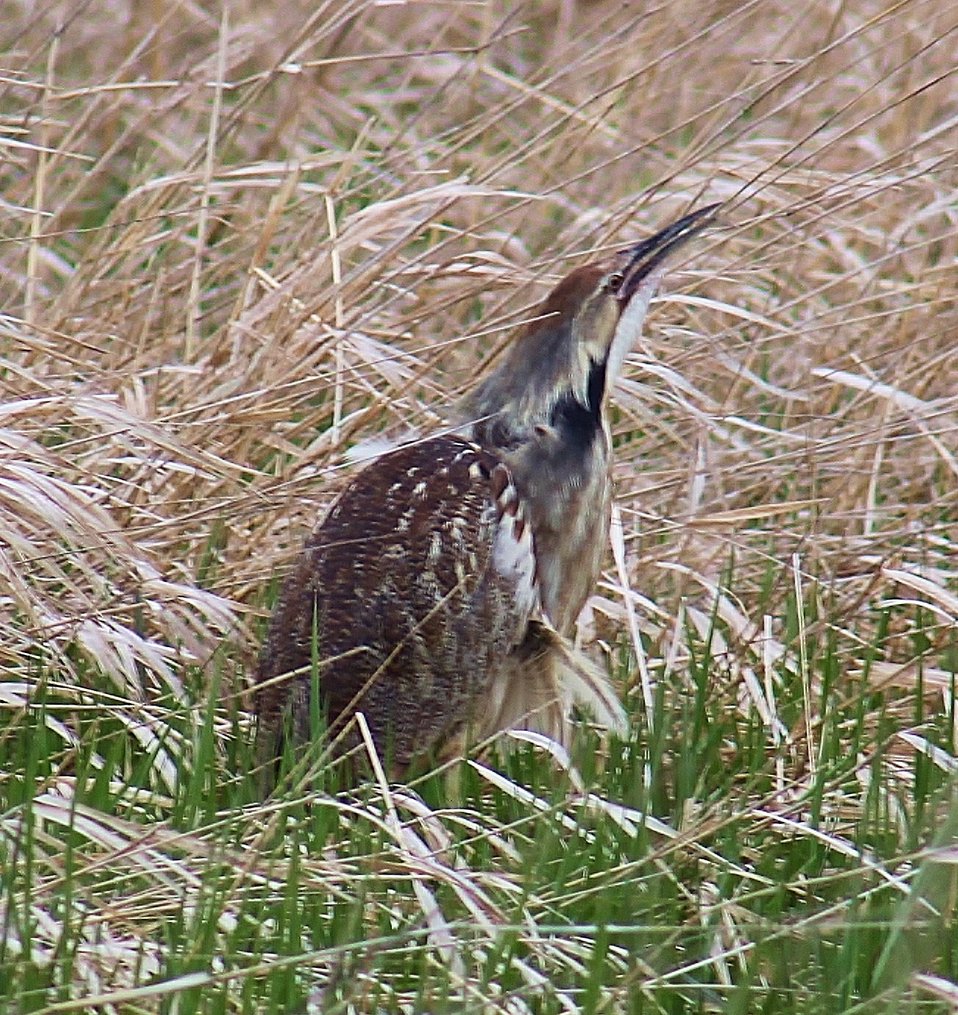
American Bittern at the Missisquoi National Wildlife Refuge